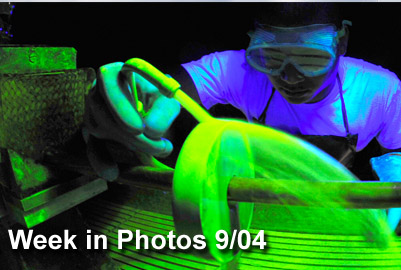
Week in Photos 9/4

Air Force Week in Photos for Sept. 4 highlights photos from around the Air Force. In this photo by Staff Sgt. Christopher Boitz, Airman 1st Class Marvin Moss looks for surface defects under a black light Aug. 26, 2009, at Eielson Air Force Base, Alaska.